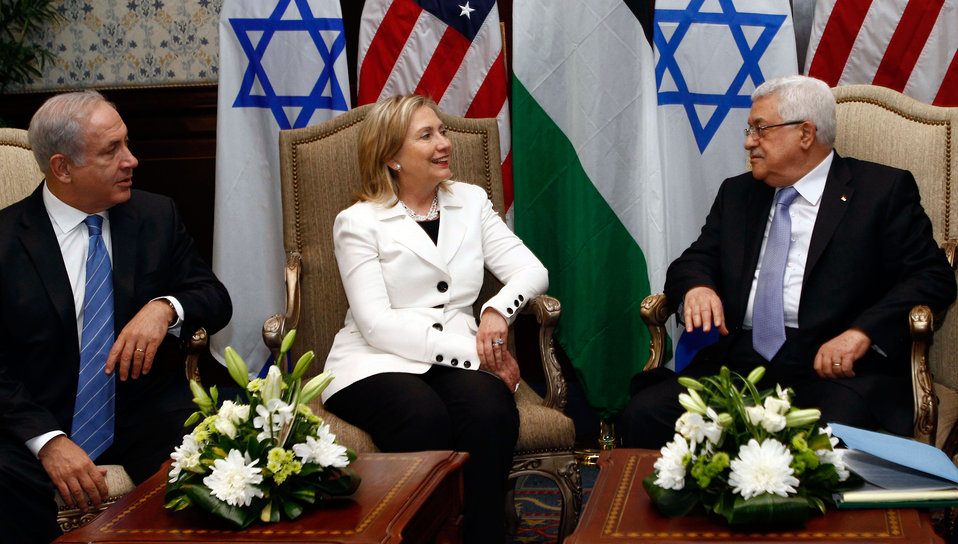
Secretary Clinton Hosts Talks Between Israeli Prime Minister Netanyahu and Palestinian President Abbas

U.S. Secretary of State Hillary Rodham Clinton, center; hosts direct talks between Palestinian President Mahmoud Abbas, right; and Israeli Prime Minister Benjamin Netanyahu, left; in Sharm El-Sheikh, Egypt, on September 14, 2010.